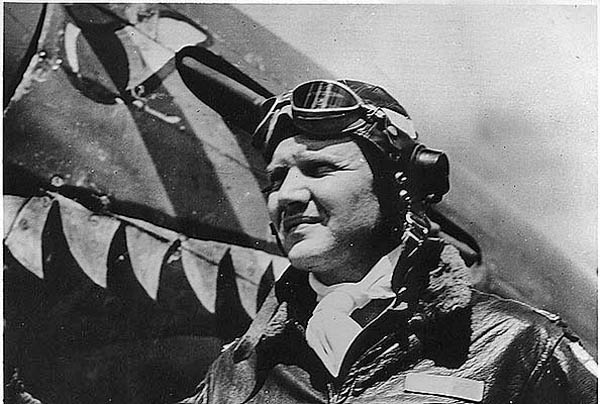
Famed Flying Tiger Ace dies

Famed Flying Tigers Ace and Texas Air National Guardsman Brig. Gen. David Lee